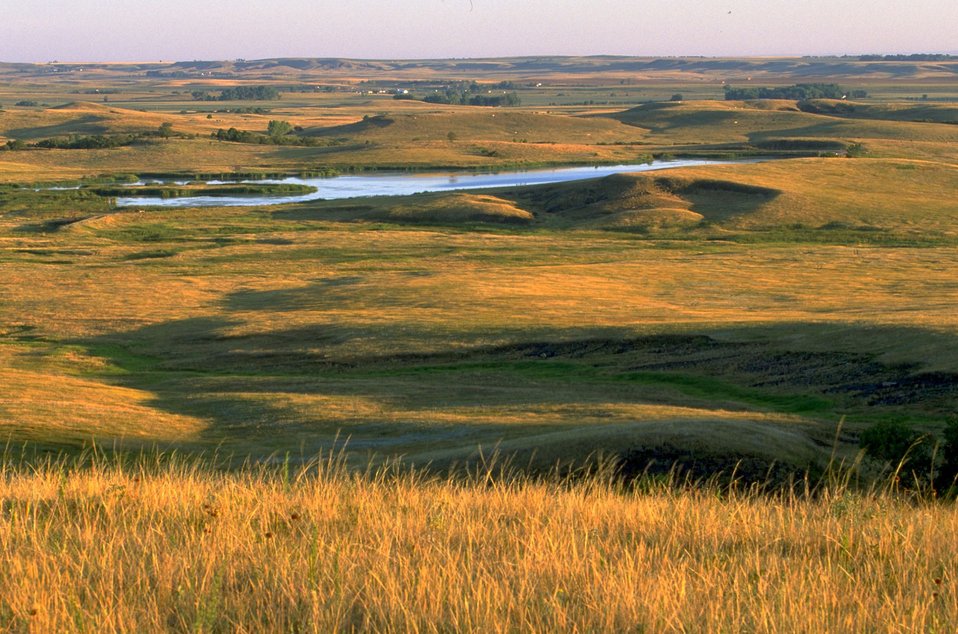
Fort Meade Reservoir